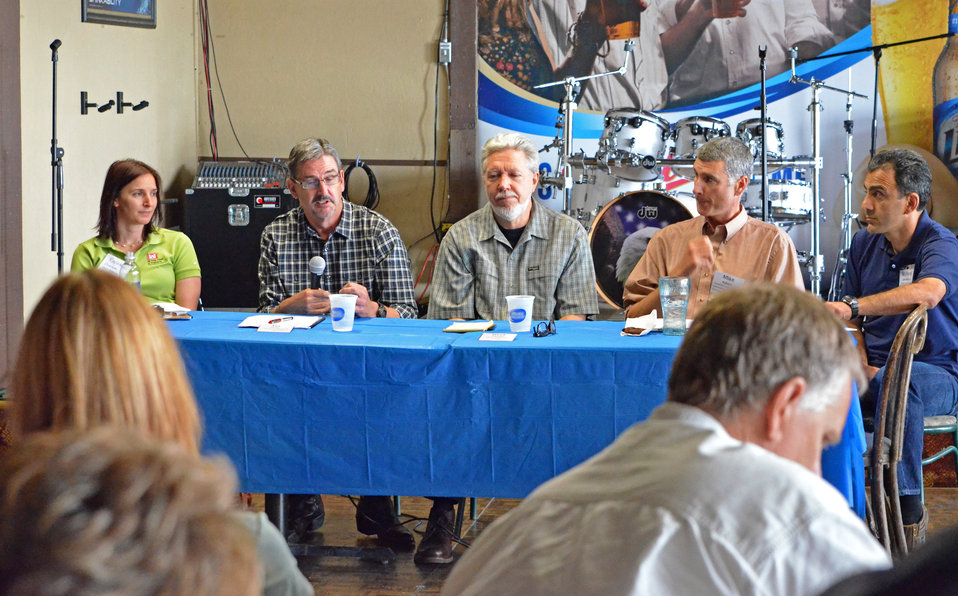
Corps participates in levee vegetation discussion

From left: Rachel Orellana, U.S. Army Corps of Engineers; Les Harder, HDR; Steve Chainey, AECOM; Mike Roberts and Michael Sabbaghian, California Department of Water Resources; answer questions about vegetation on levees during a panel discussion May 15, 2014 in Lodi, Calif. The panel was held for about 40 people during the Water Education Foundation’s two-day flood management tour, which offers a firsthand look at water facilities, levees and rivers, and provides discussion on a range of topics that impact how agencies operate and maintain flood risk reduction features. Photo cropped for emphasis.